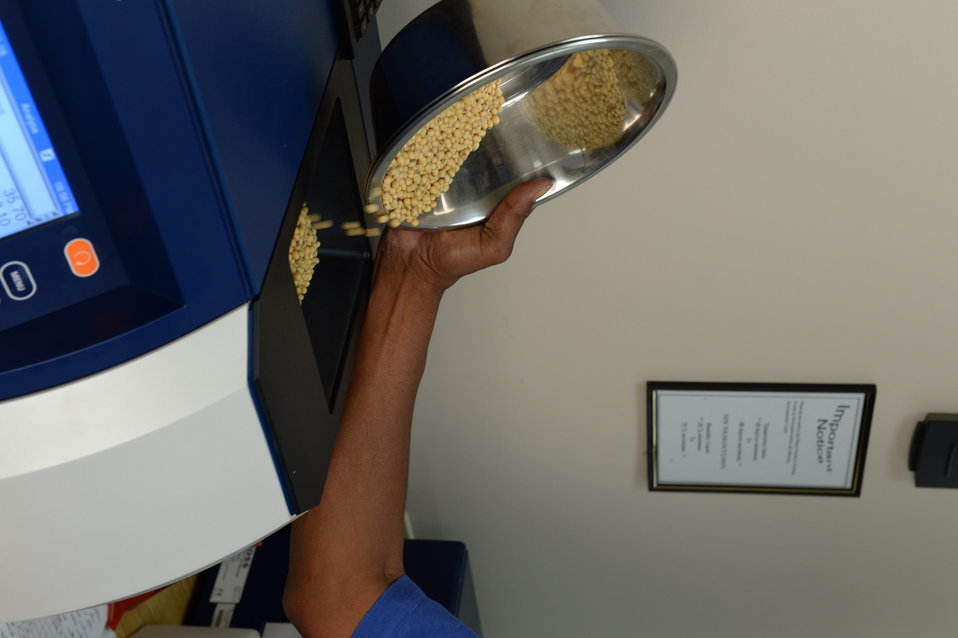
U.S. Department of Agriculture (USDA) Grain Inspection, Packers and Stockyards Administration (GIPSA) Federal Grain Inspection Service (FGIS) employee tests soybean samples at the FGIS inspection laboratory in New Orleans, LA on Monday, Nov. 18, 2013.